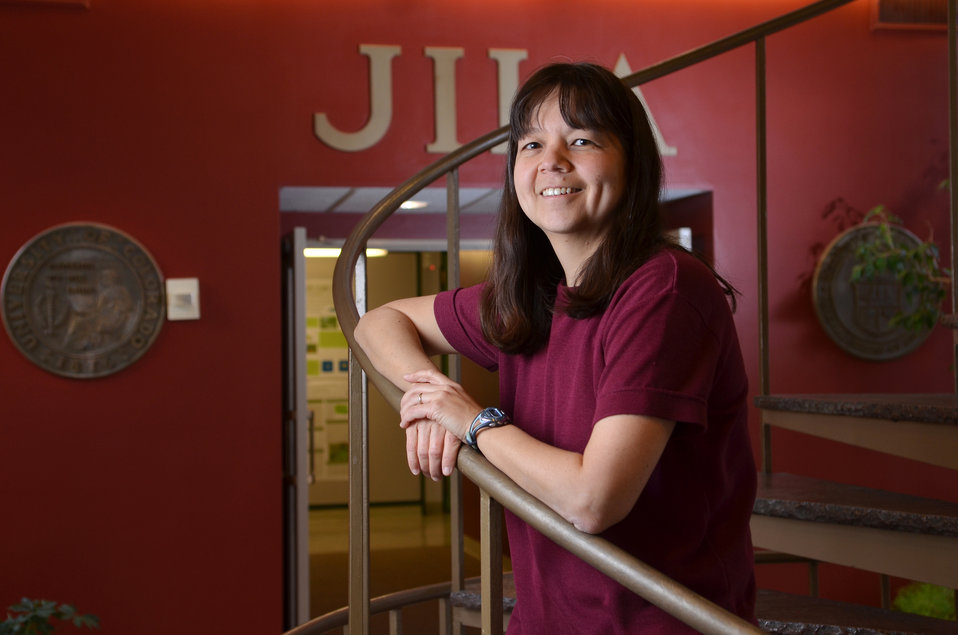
Deborah Jin, CU-Boulder Adjoint professor of Physics, photographed in one of the lobbies of the JILA facility on the CU-Boulder campus.